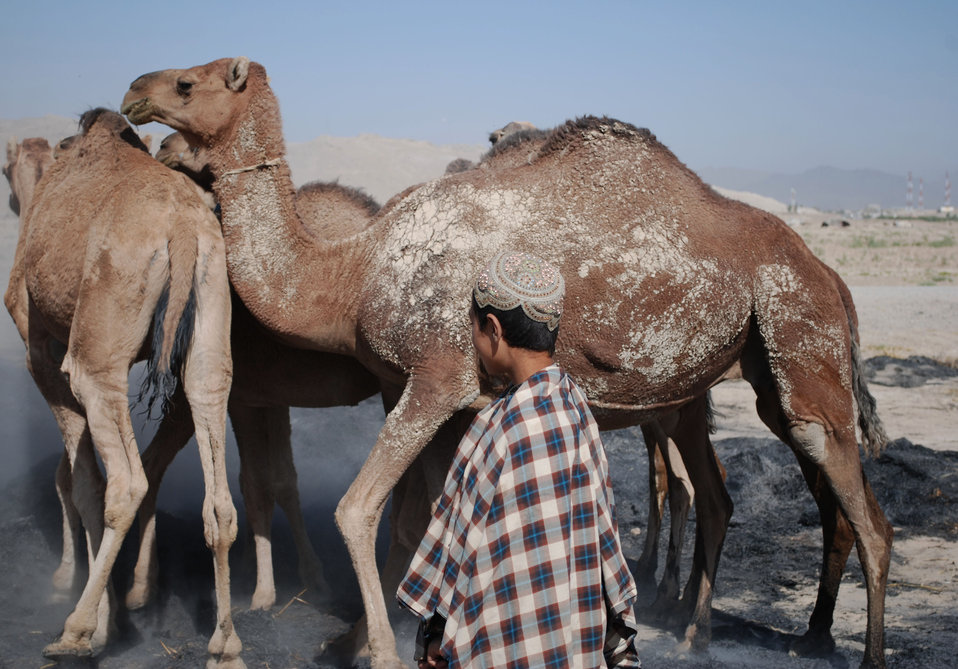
'On the Road' in Kandahar